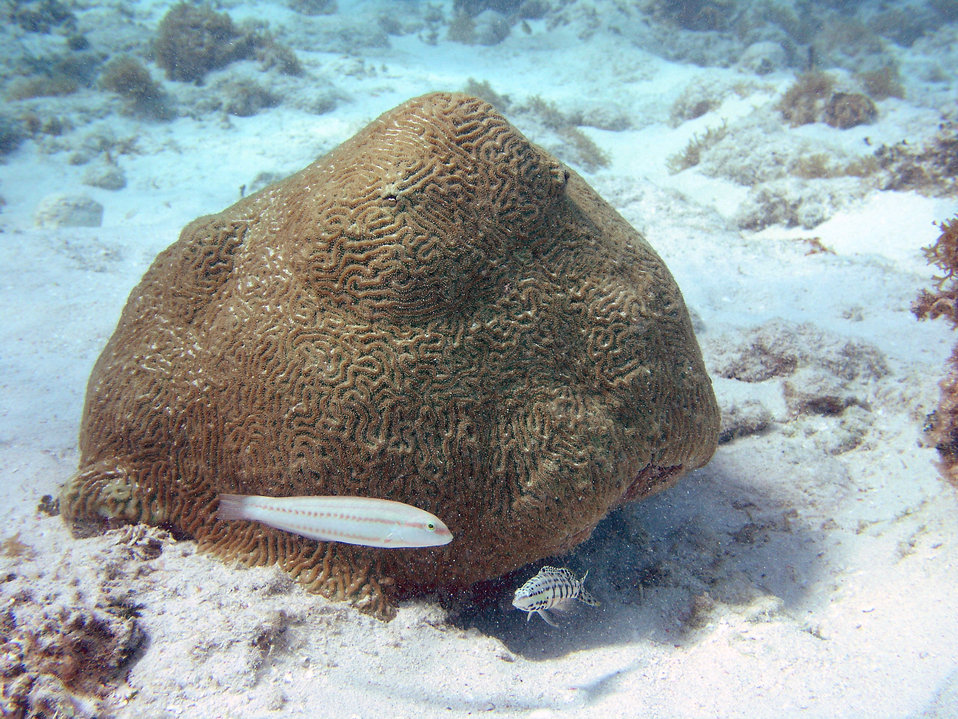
Slippery dick (Halichoeres bivittatus) to left and harlequin bass (serranus tigrinus) below to right of slippery dick.